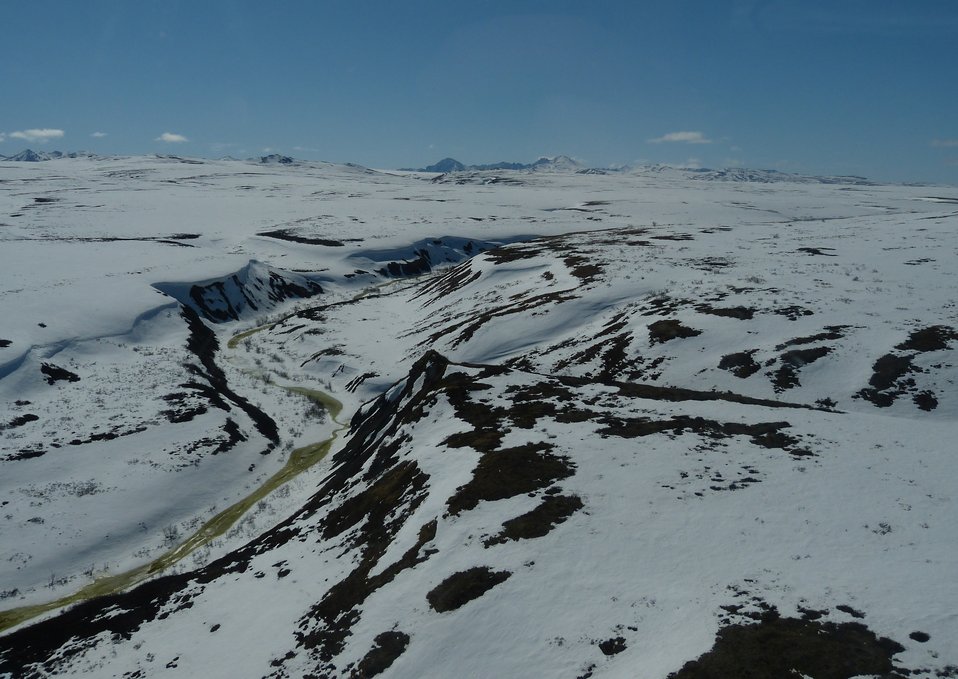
Kilbuck Mountains May2013 KSowl

Cliff-nesting raptor survey, Kilbuck Mountains, Yukon Delta National Wildlife Refuge

Photo credit: Kristine Sowl,
USFWS, YDNWR